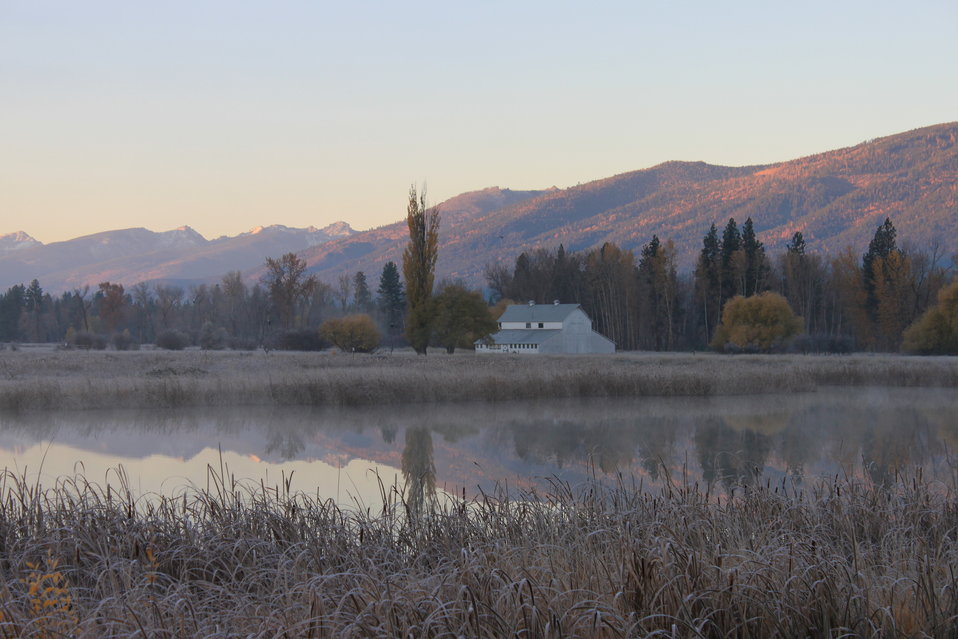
Grube Barn and Fall Landscape

Historic Barn on Lee Metcalf National Wildlife Refuge.